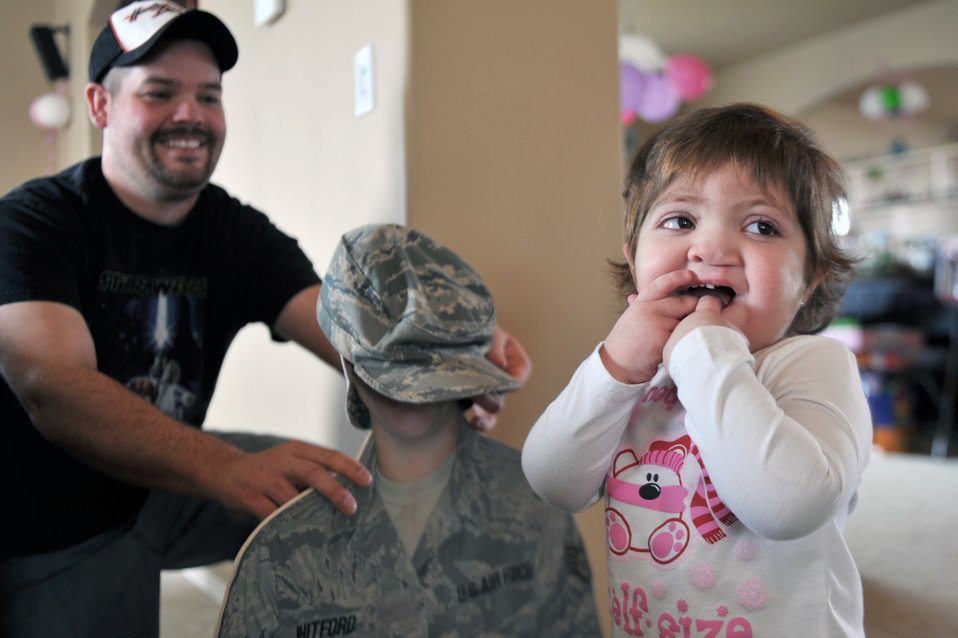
Exceptional Family Member Program

Braelyn Whitford smiles after putting a ABU cap on a cut-out of her mothers head with her father, Matt, at their home in Spokane, Wash., on Apr. 5, 2011. Braelyn is diagnosed with Kabuki Syndrome. Braelyn and her family are assisted through the Exceptional Family Member Program which connects active duty family members who have special needs with many helping agencies both on- and off- base.